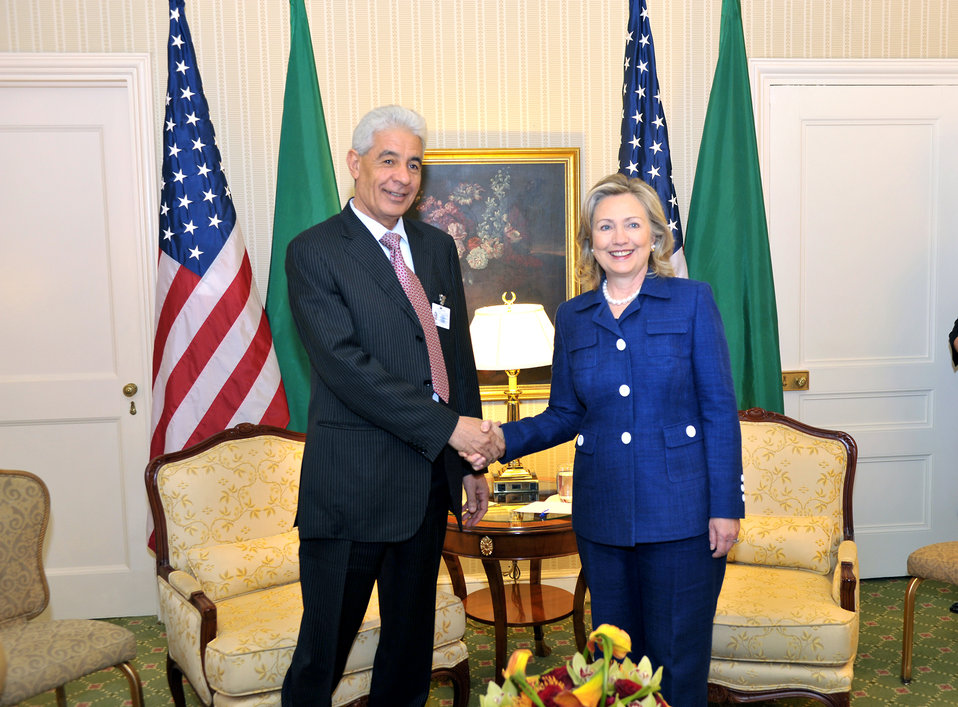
Secretary Clinton Shakes Hands With Libyan Foreign Minister Kousa

U.S. Secretary of State Hillary Rodham Clinton shakes hands with Libyan Foreign Minister Musa Kousa after their bilateral meeting at the Waldorf-Astoria in New York, New York, on September 21, 2010.